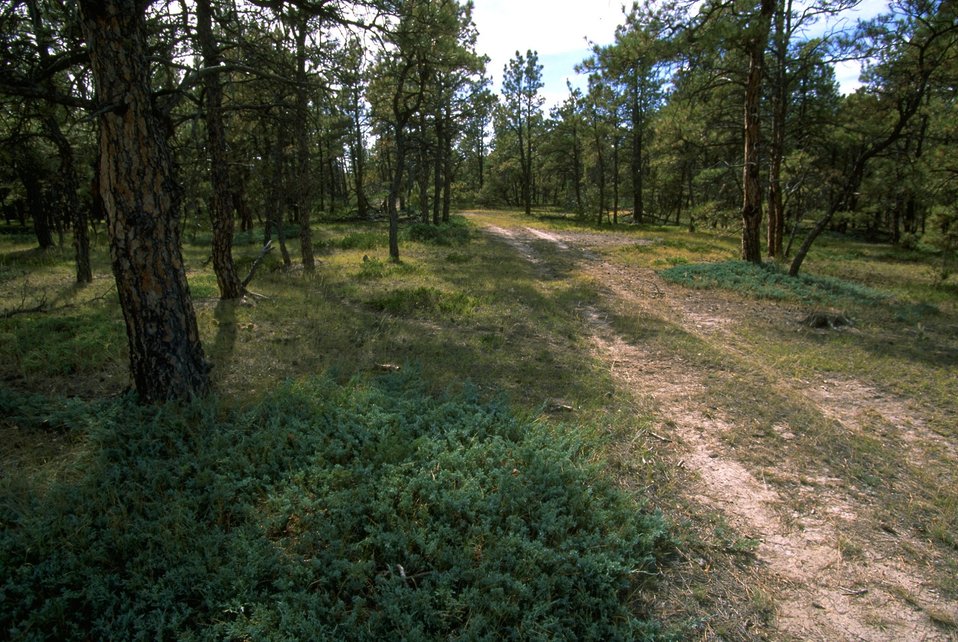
Acid Shale Area of Critical Environmental Concern (ACEC)